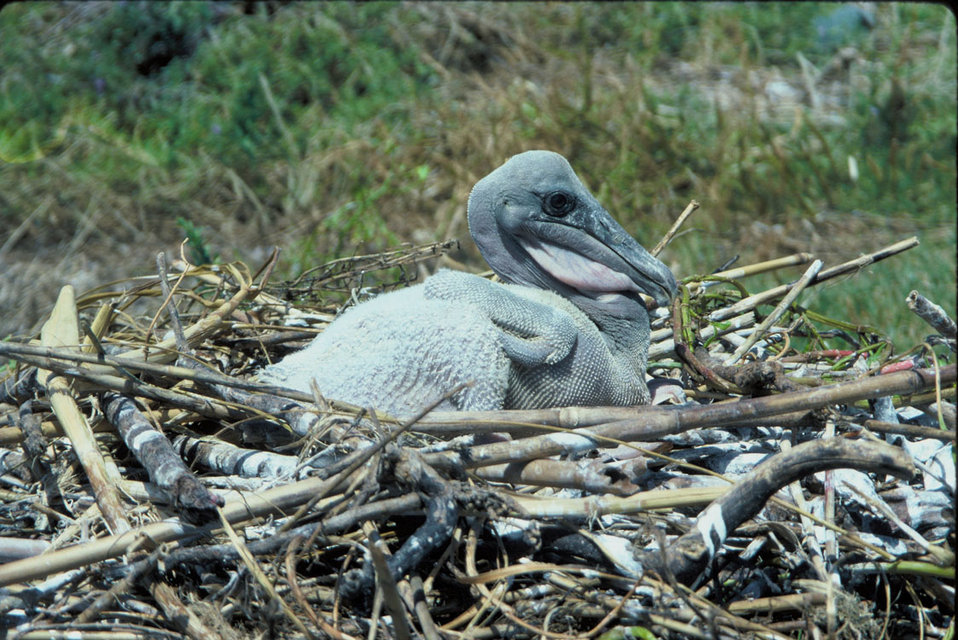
Brown pelican

Close view of a brown pelican chick in nest.